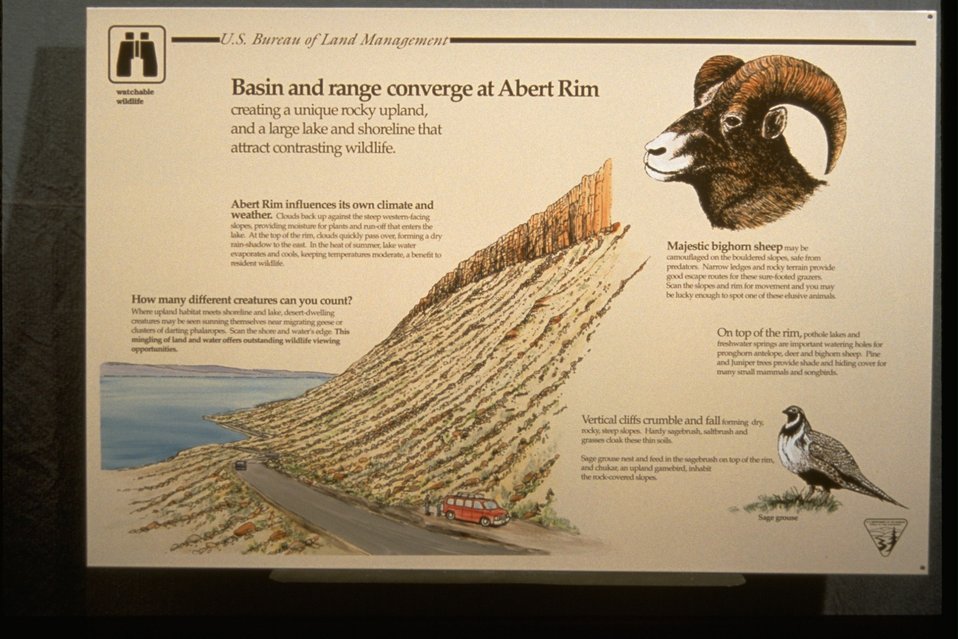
Close-up of interpretive panel at Abert Rim/Abert Lake.